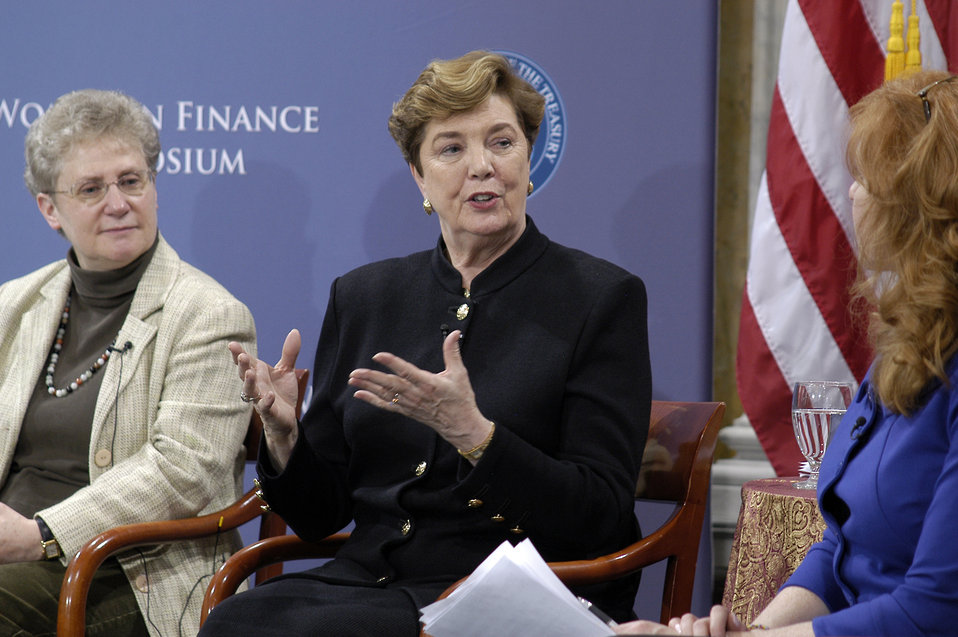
Women in Finance Symposium, 03/29/2010

Senior U.S. Investment Strategist for Goldman Sachs Abby Joseph Cohen and President of the American Council on Education Molly Broad at the Women in Finance Symposium, March 29, 2010.